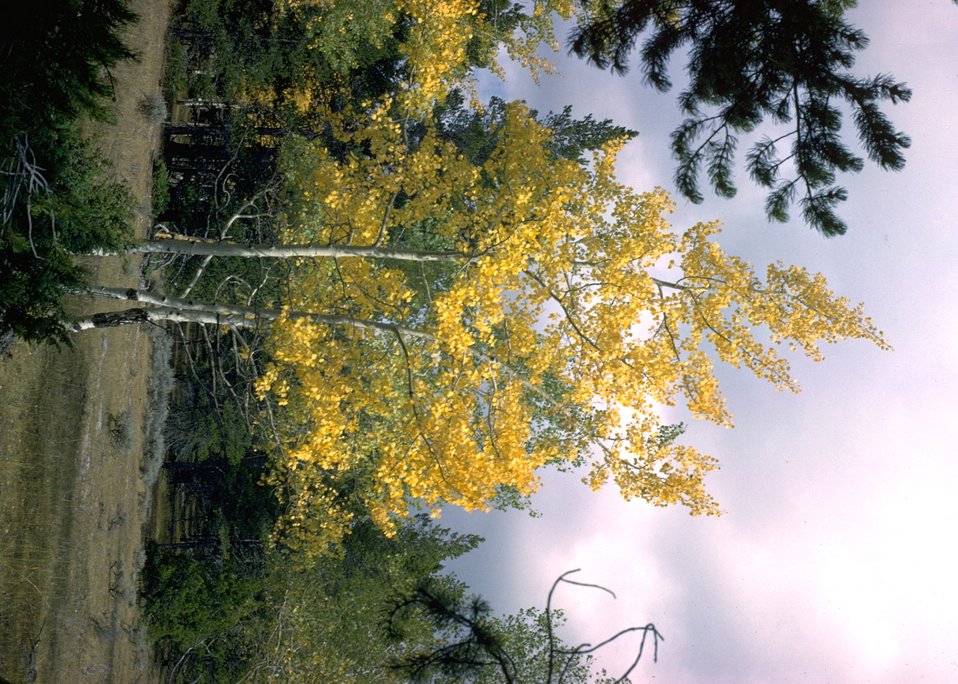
The Aspen, is a decidous tree, loosing it's leaves each fall.